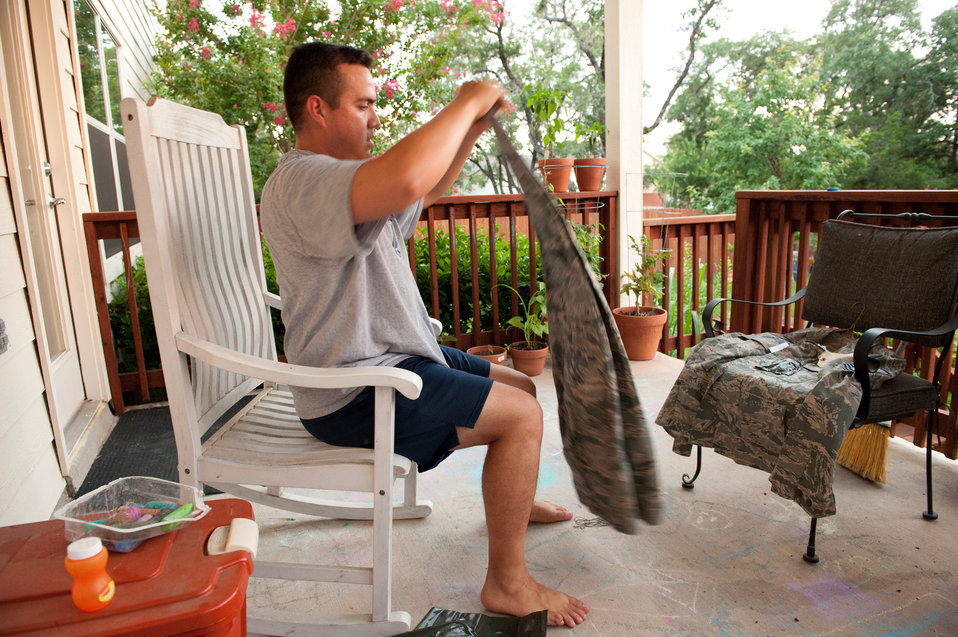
Blogging Couple Deployment preperation

Master Sgt. Rudy Gamez prepares to roll his uniform before it is slipped into a bag of permethrin insect repellent and water emulsion at his home in San Antonio, Texas, on July 13, 2010. The treatment will provide some insect protection for many washings. He is preparing for Combat Skills Training and his sixth deployment to Southwest Asia. Later this year he and his wife Tech. Sgt Christina Gamez will both be deployed and blogging about their experiences.